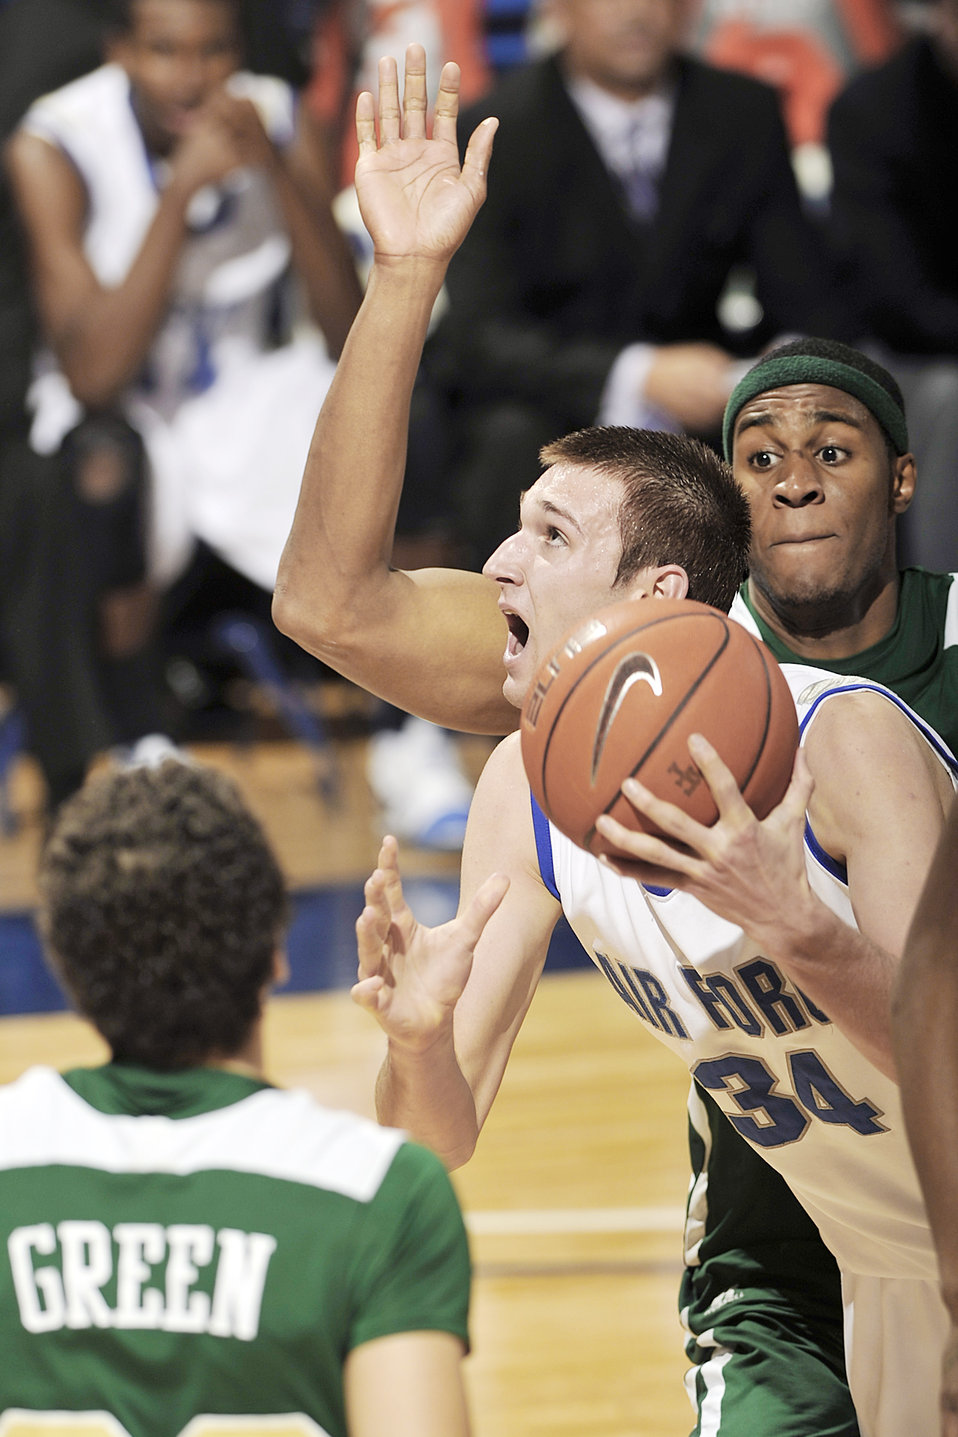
Colorado State beat Falcons

Freshman Taylor Broekhuis eyes the basket as Colorado State beat Air Force 51-47 in front of about 1,700 people at the U.S. Air Force Academy's Clune Arena Feb. 9, 2010. The Falcons are 9-14 overall and 1-9 in the Mountain West Conference.